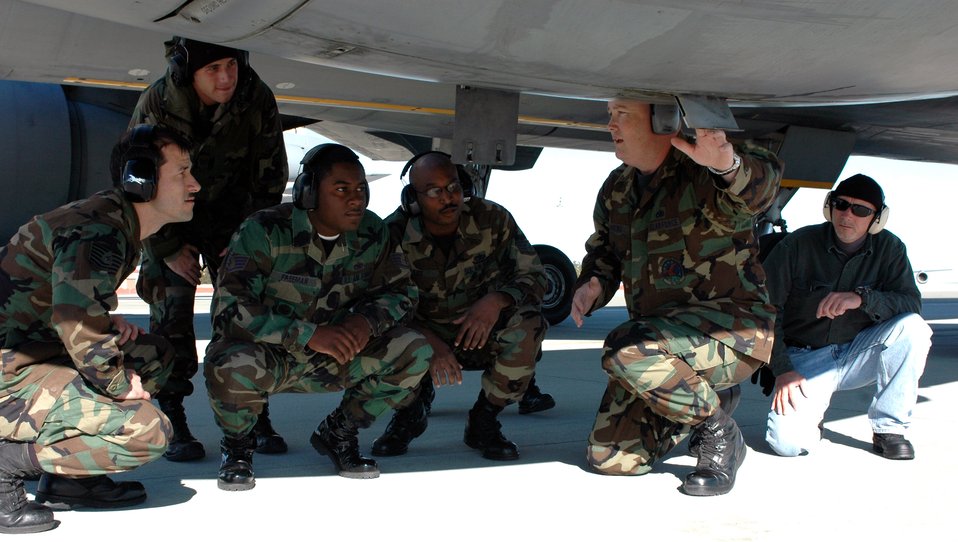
Travis trains PACAF crews to maintain KC-10s

Tech. Sgt. Kevin Harding (second from the right) discusses what happens if a KC-10 Extender No. 1 engine's drain mast is not properly serviced with KC-10 training course students Jan. 17 at Travis Air Force Base, Calif. Sergeant Harding is assigned to the 60th Maintenance Operations Squadron at Travis AFB. Currently six Airmen from Hickam AFB, Hawaii and Kadena Air Base, Japan, are taking the two-phase course designed to train enroute maintainers how to recover and perform basic maintenance tasks and help move the aircraft through the theatre more efficiently.